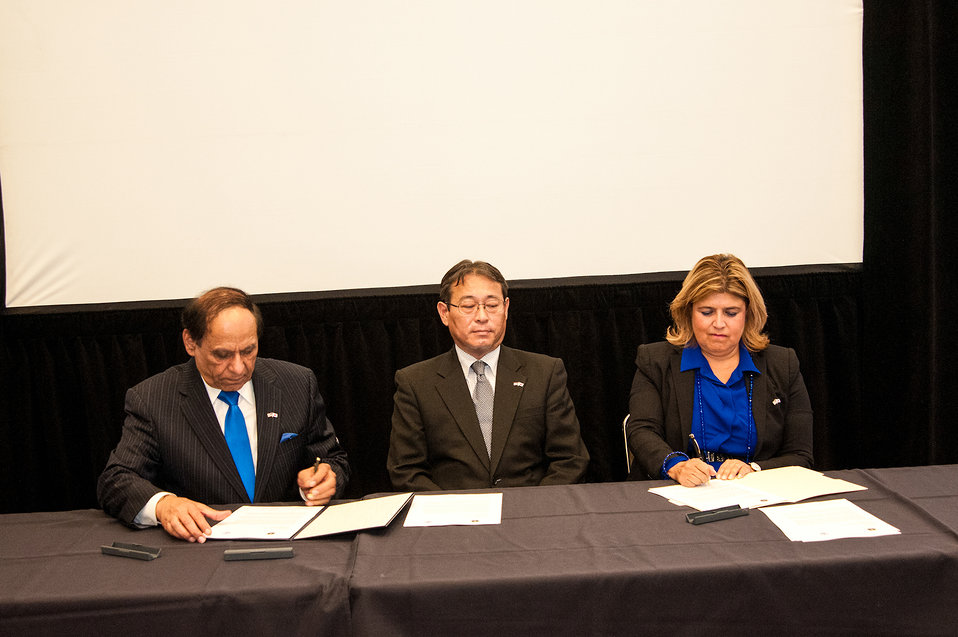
(L to R) U.S. Trade Representatives Ambassador Islam Siddiqui Islam Siddiqui, Japan’s Forestry and Fishery Ministry of Agriculture Division of Food Safety and Consumer Affairs Bureau Director of Labeling and Standards Satoshi Kunii Satoshi Kunii, and U.S. Department of Agriculture (USDA) Agricultural Marketing Service (AMS) Administrator Anne Alonzo sign a memorandum of understanding prior to announcing an important trade agreement with Japan for USDA’s National Organic Program at the Natural Products Expo East conference in Baltimore, MD on Thursday, Sep. 26, 2013.